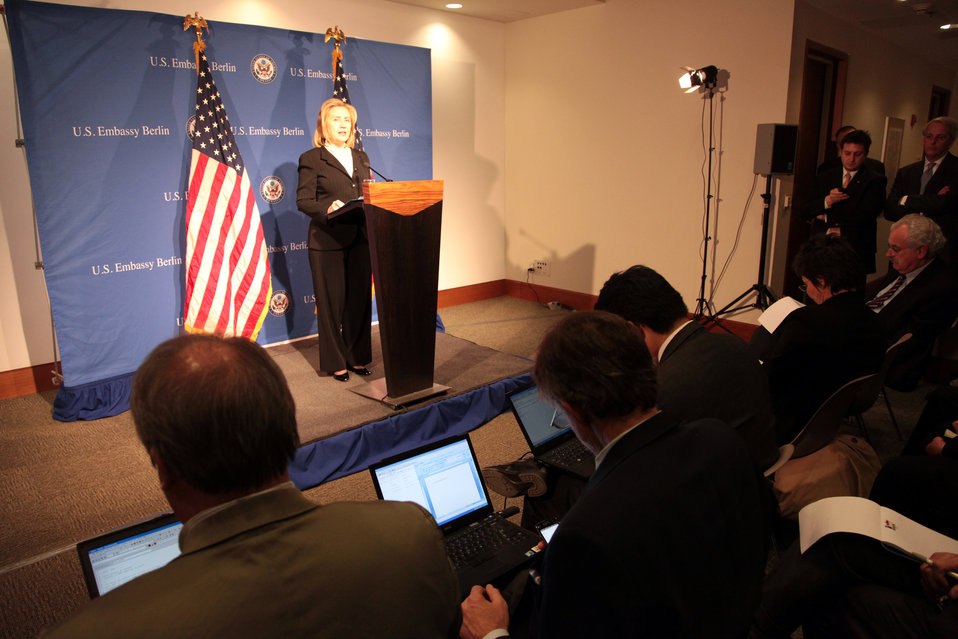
Secretary Clinton Addresses Reporters

U.S. Secretary of State Hillary Rodham Clinton addresses reporters at a press conference at the U.S. Embassy in Berlin, Germany, on April 15, 2011.